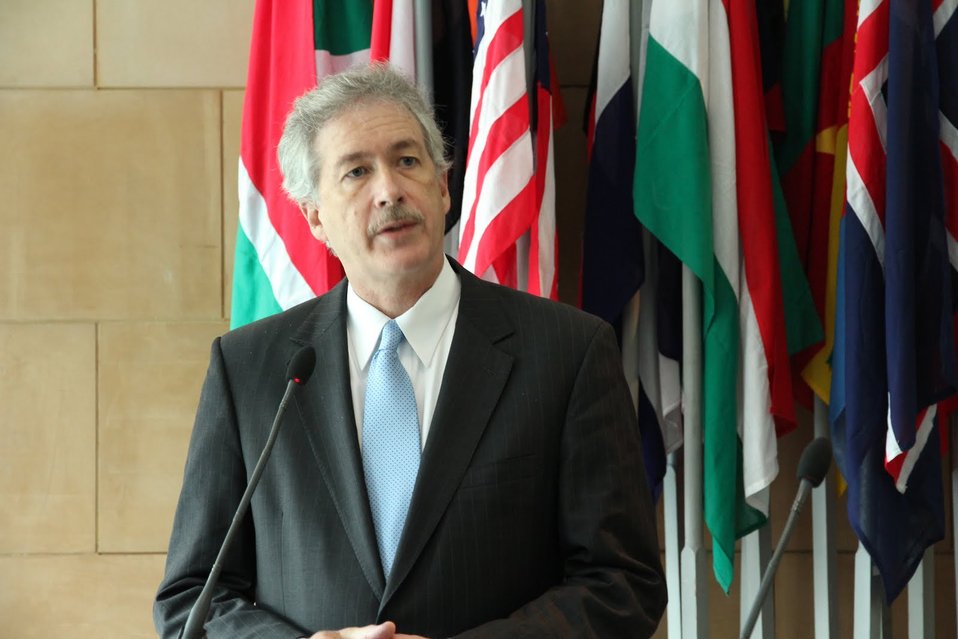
Under Secretary Burns Delivers Remarks

Under Secretary for Political Affairs William J. Burns delivers remarks at the Thai Ministry of Foreign Affairs in Bangkok, Thailand, on July 16, 2010.